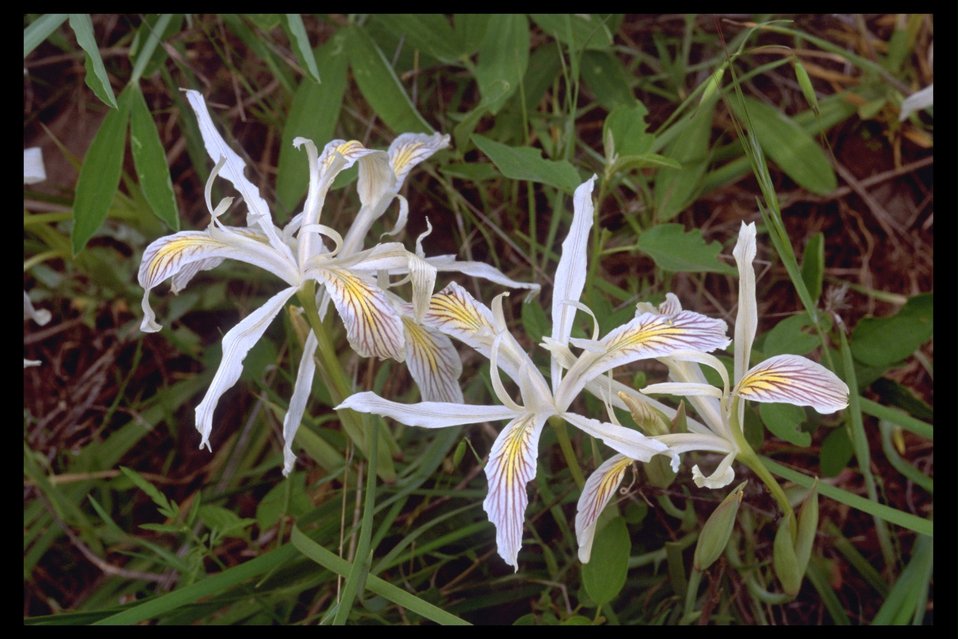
Yellow-leaved Iris, also called the Wild Iris, (Iris chrysophylla) near Highway 227 west of Trail, OR.